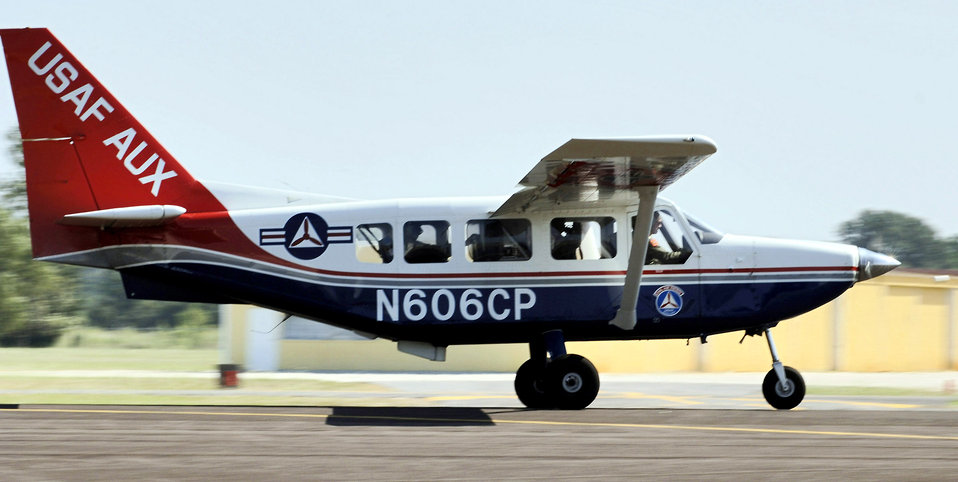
CAP proves worth during Katrina relief

The Civil Air Patrol, the Air Force's official volunteer auxiliary, provides emergency services including air and ground search and rescue, disaster relief and counterdrug missions. Nearly 57,000 members from coast to coast are committed to CAP's emergency services and disaster relief missions.